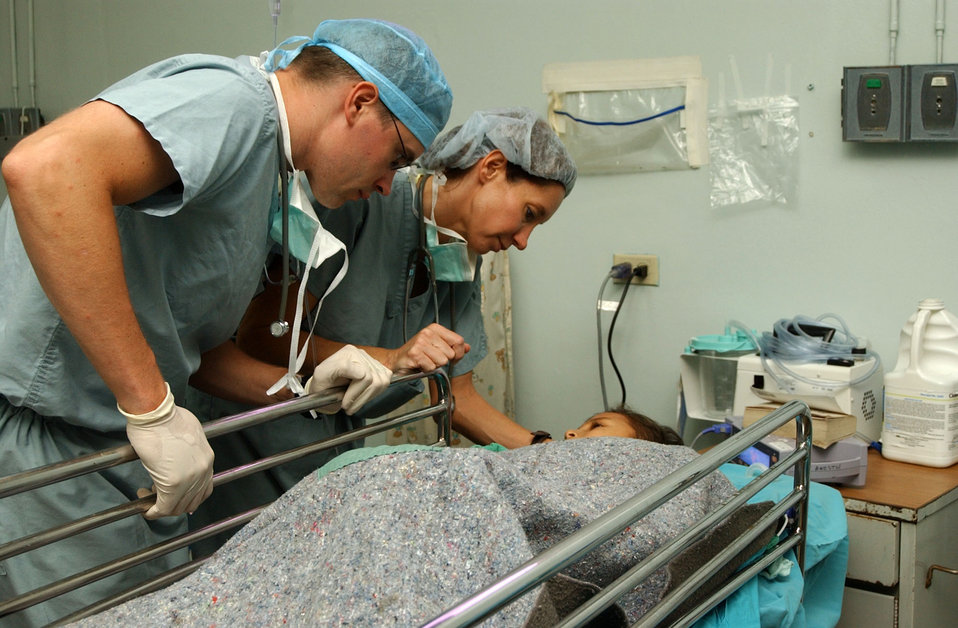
Americans, Hondurans team to fix broken bones

Maj. (Dr.) Christopher James, anesthesiologist, and Maj. Elizabeth Cooley, recovery room nurse, tend to a 9-year-old boy Aug. 15 at the Hospital Esquela in Tegucigalpa, Honduras. The boy had damage to his right leg from an infection. A medical team of eight people from Wilford Hall Medical Center at San Antonio and Joint Task Force-Bravo at Soto Cano Air Base, Honduras, treated more than 200 people and operated on more than 60 individuals during its two-week training exercise Aug. 5 to 19. Major James is an anesthesiologist and Major Cooley is a recovery room nurse.